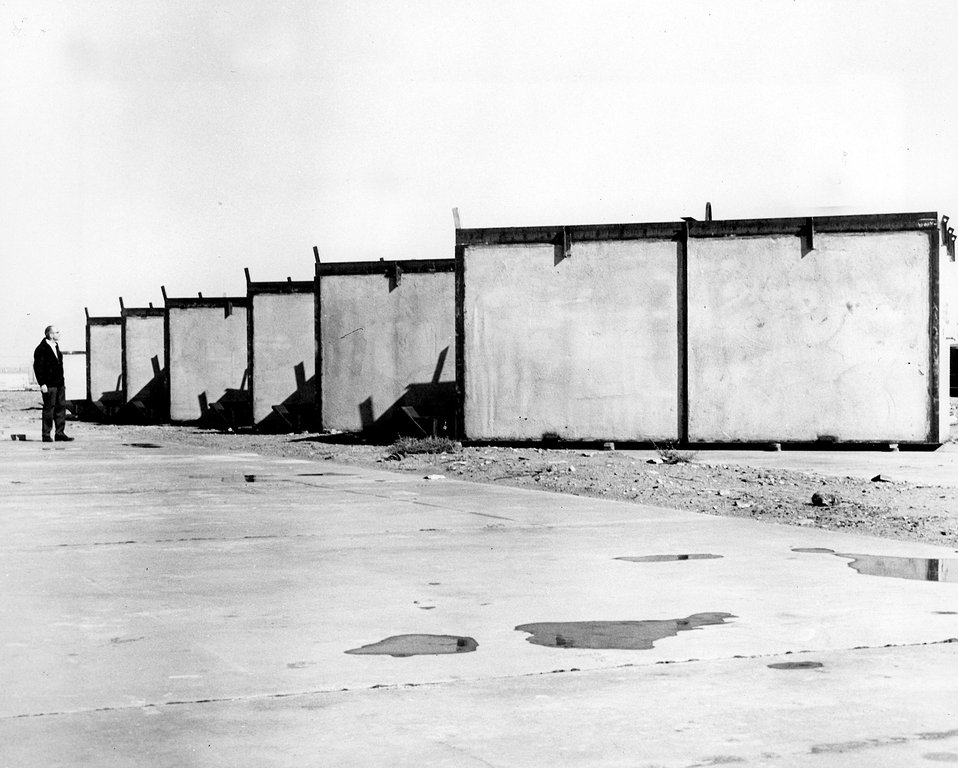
Concrete burial boxes weighing up to 30 tons are used to bury highly
radioactive process equipment which cannot be decontaminated to low
level at the Energy Research and Development Administration's Hanford
Works.